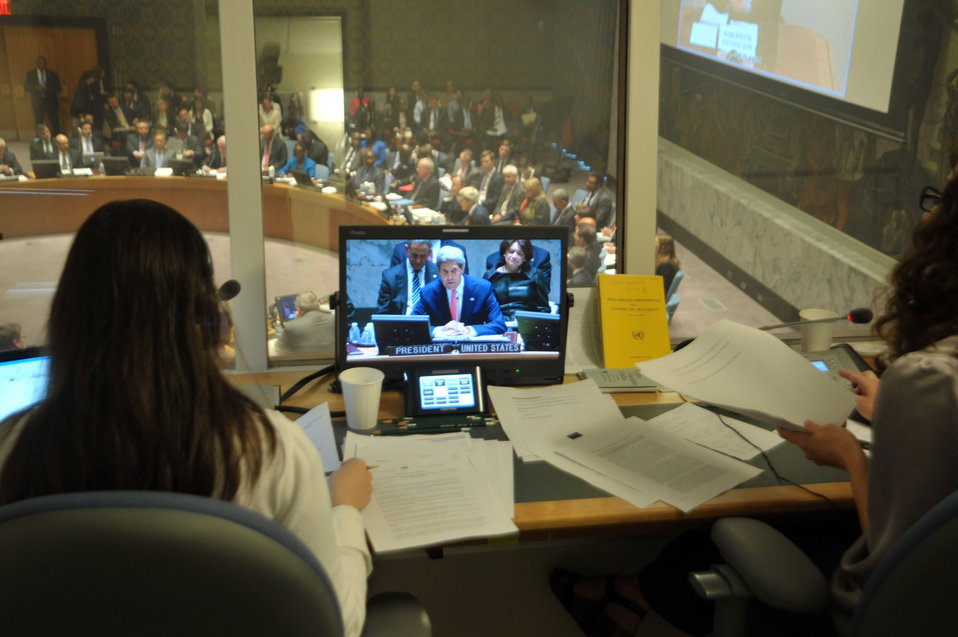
An Image of Secretary Kerry Is Seen on a TV Screen in a Translators' Booth

An image of U.S. Secretary of State John Kerry is seen on a TV screen in a translators' booth at the United Nations Security Council meeting room in New York City on July 25, 2013.